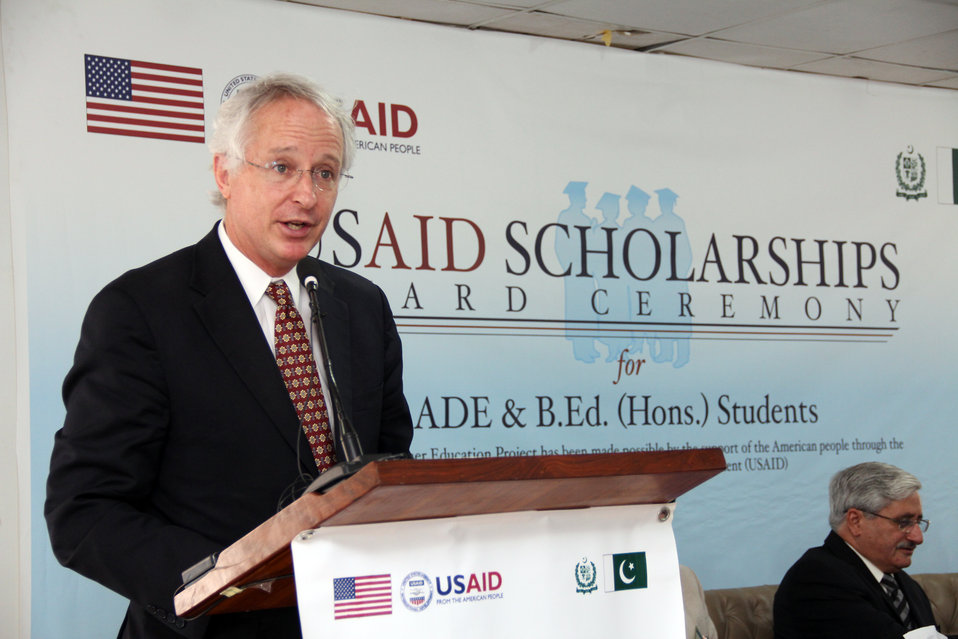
Scholarship distribution ceremony

Ambassador, US